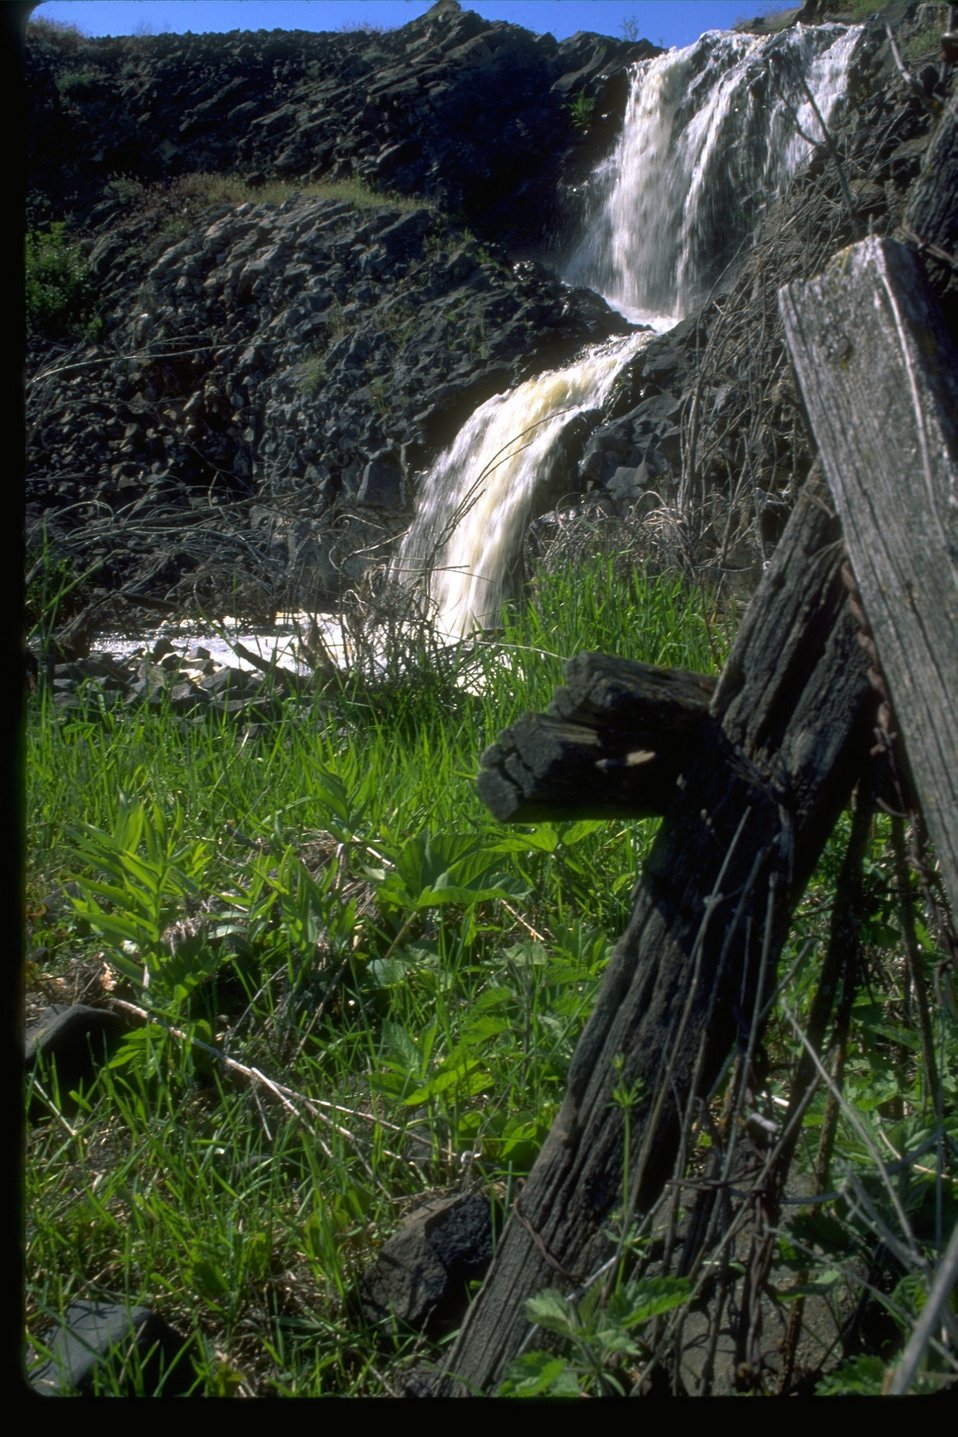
Waterfall in Twin Lakes Canyon, Lincoln County, Washington.